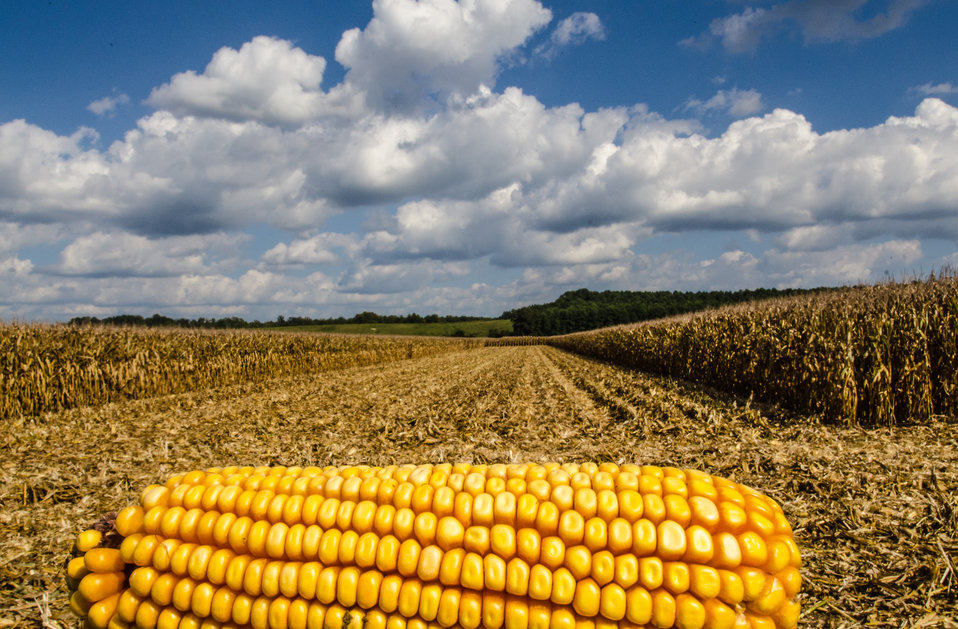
Feed corn prior to being fed into the corn harvester, during the harvest at the John N. Mills & Sons farm; a family owned business located in the Hanover and King William Counties Virginia, on Friday, Sept. 20, 2013. Pleasant Level Farm was the original farm from a Land Grant from King George III of England to Nicholas Mills in 1725. The original acreage has never left the Mills family name and continues to be farmed by the family.
Now the farm covers 5,744 acres that produce corn, wheat, soybeans, barley, hay, timber, and pastures a large herd of beef cattle. They have been using conservation and stewardship practices since the 1960s. Some of the efficient practices include no-till planting and cover crops to reduce soil erosion and prevent the leaching of nutrients into ground water, as well as livestock stream exclusion. The farm has several conservation easements that aids in the preservation and restoration of wetlands and waterways. For information about the U.S. Department of Agriculture (USDA), please go to www.usda.gov.